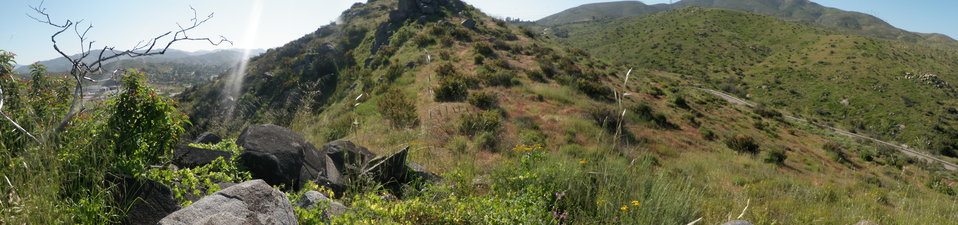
Mountain top view on the San Diego National Wildlife Refuge

Taken in summer 2010 while hunting for Quino checkerspot butterflies.